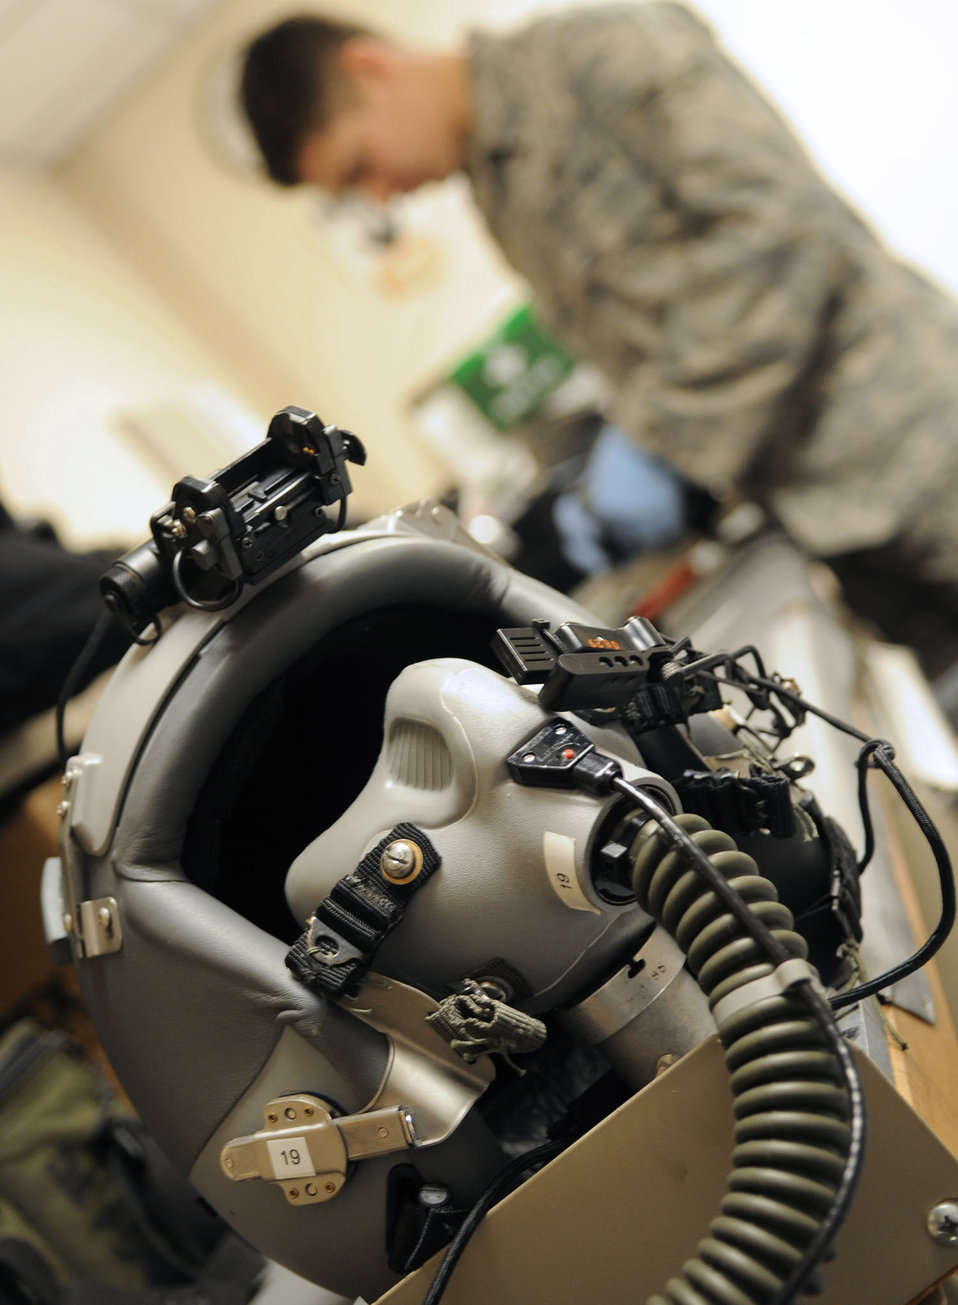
Pilot's life line

A flight crew helmet sits after being inspected by Airman 1st Class Russell Barrow April 21 at Royal Air Force Mildenhall, England. Airman Barrow inspects all aircrew equipment and survival gear before use. He is a 352nd Operation Support Squadron aircrew flight equipment apprentice.